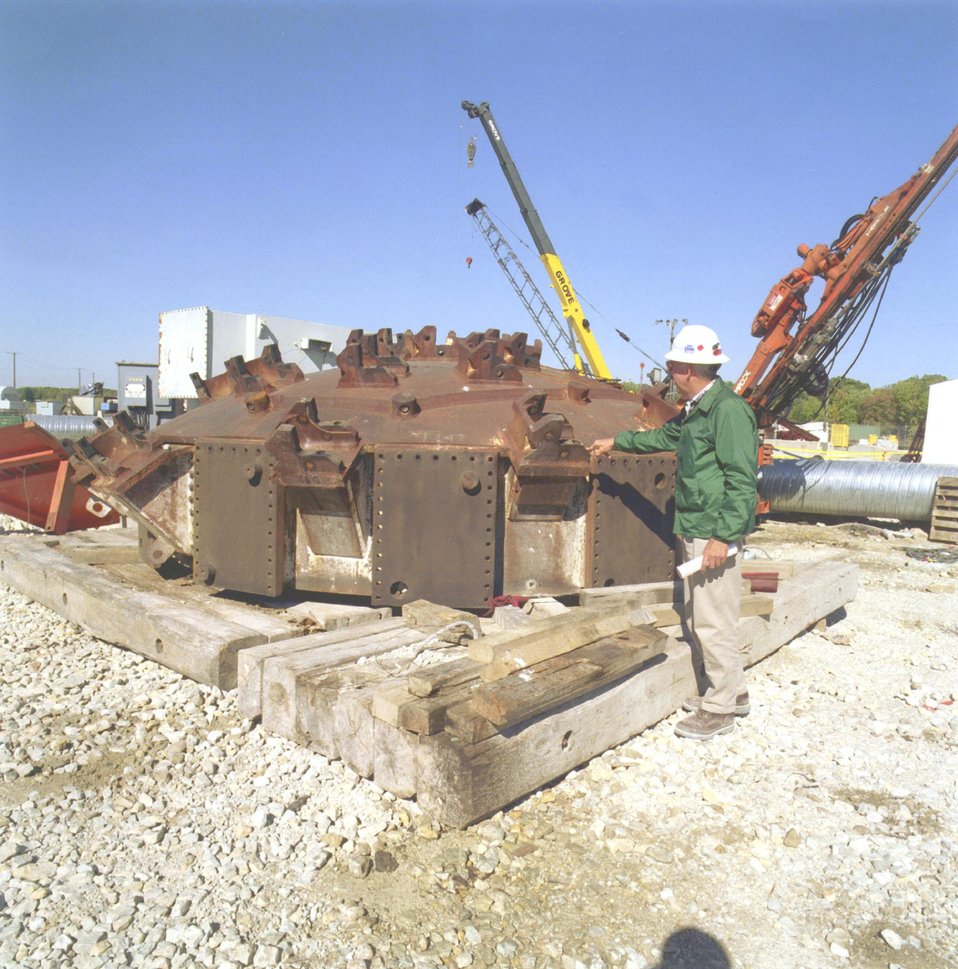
INSPECTING THE DRILL HEAD OF THE TUNNEL BORING MACHINE TO BE USED TO EXCAVATE A 3,000 FOOT LONG TUNNEL, FOR THE NUMI PROJECT.

SINCE MARCH 2000 AN UNDERGROUND SYSTEMS OF HALLS, SHAFTS AND TUNNELS HAVE BEEN DUG FOR THE NEUTRINOS AT THE MAIN INJECTOR PROJECT. THIS NUMI CONSTRUCTION IS THE FIRST STEP TOWARD BUILDING AN EXPERIMENT AT FERMI THAT WILL DETERMINE WHETHER NEUTRINOS, WHICH ARE GHOST-LIKE PARTICLES TRAVERSING THROUGH THE UNIVERSE AT OR NEAR THE SPEED OF LIGHT, HAVE ANY MASS.